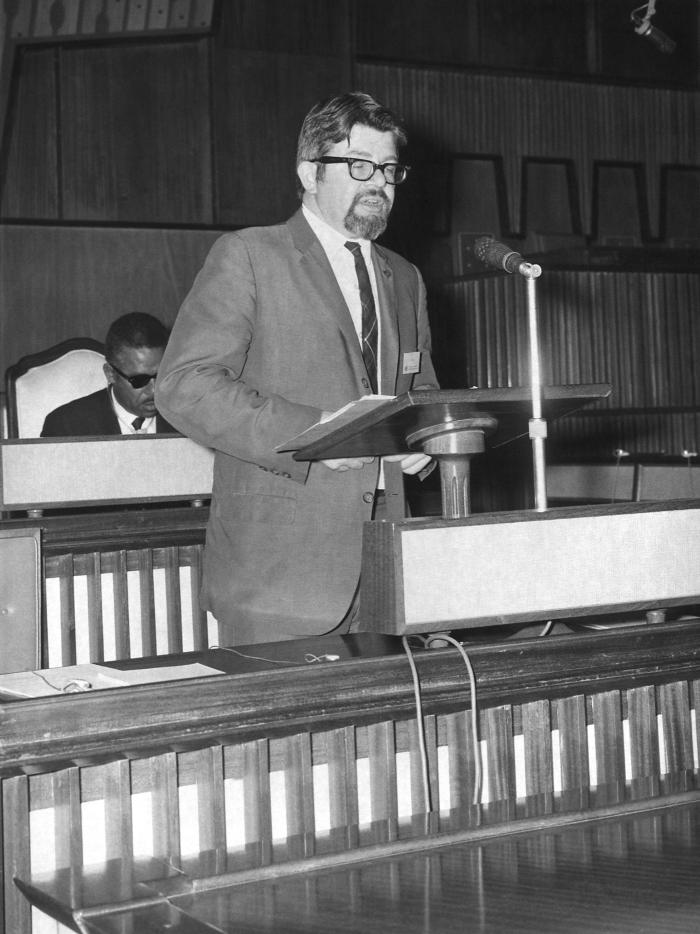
This May, 1969 photograph was taken in the Ikoya Hotel in Lagos, Nigeria during a regional conference that same year, which focused on the eradication of smallpox during worldwide eradication efforts.